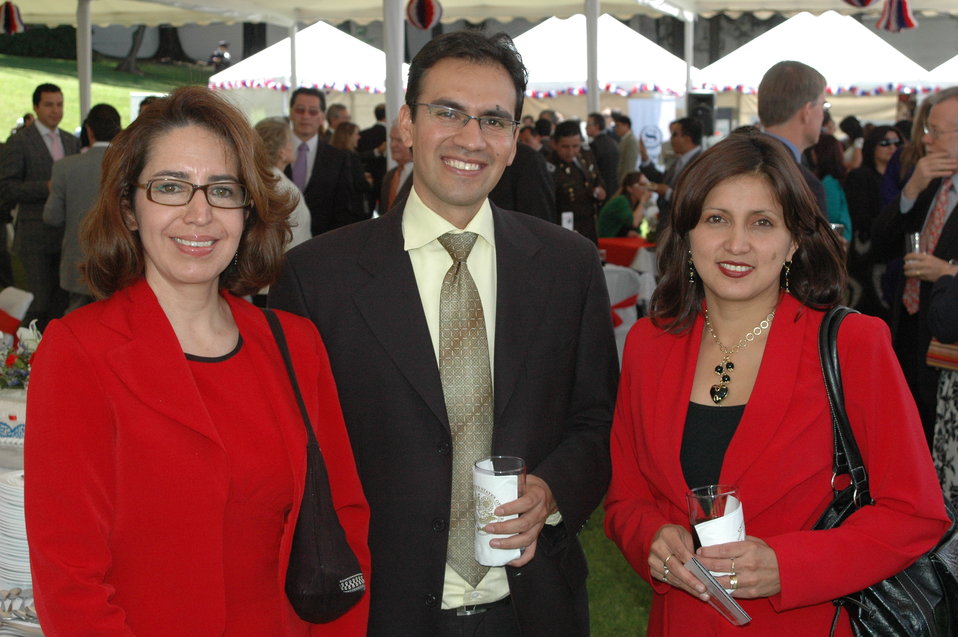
July 4th Celebration at U.S. Embassy in Ecuador

U.S. Embassy Quito staff and guests pose for a photo at the U.S. Independence Day celebration in Quito, Ecuador, on July 2, 2010.